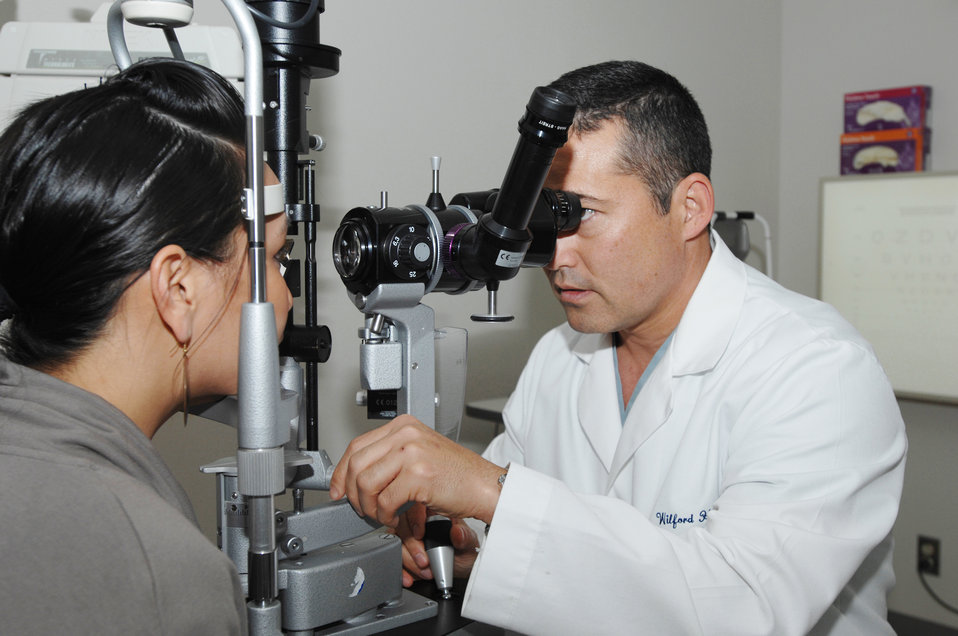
Ophthalmology surgeons employ cutting-edge technology

Lt. Col. (Dr.) Charles Reilly examines a patient's eyes Nov. 17, 2009, at Lackland Air Force Base, Texas. Doctor Reilly was the first in the Department of Defense to use a femtosecond laser to cut cornea tissue in preparation for a cornea transplant. Doctor Reilly is the chair of the department of ophthalmology for the 59th Medical Wing.